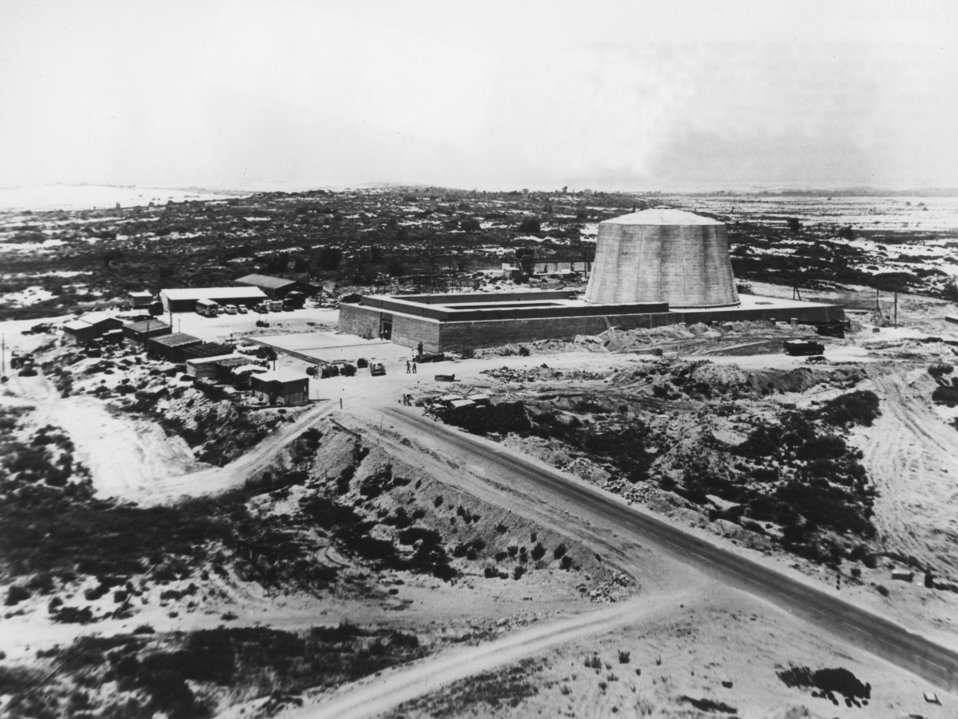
MODERN MIRACLE IN THE DESERT is this nuclear research reactor designed and built by American Machine & Foundry Company for the Israel Atomic Energy Commission under President Eisenhower's 'Atoms for Peace' program. c. 1960